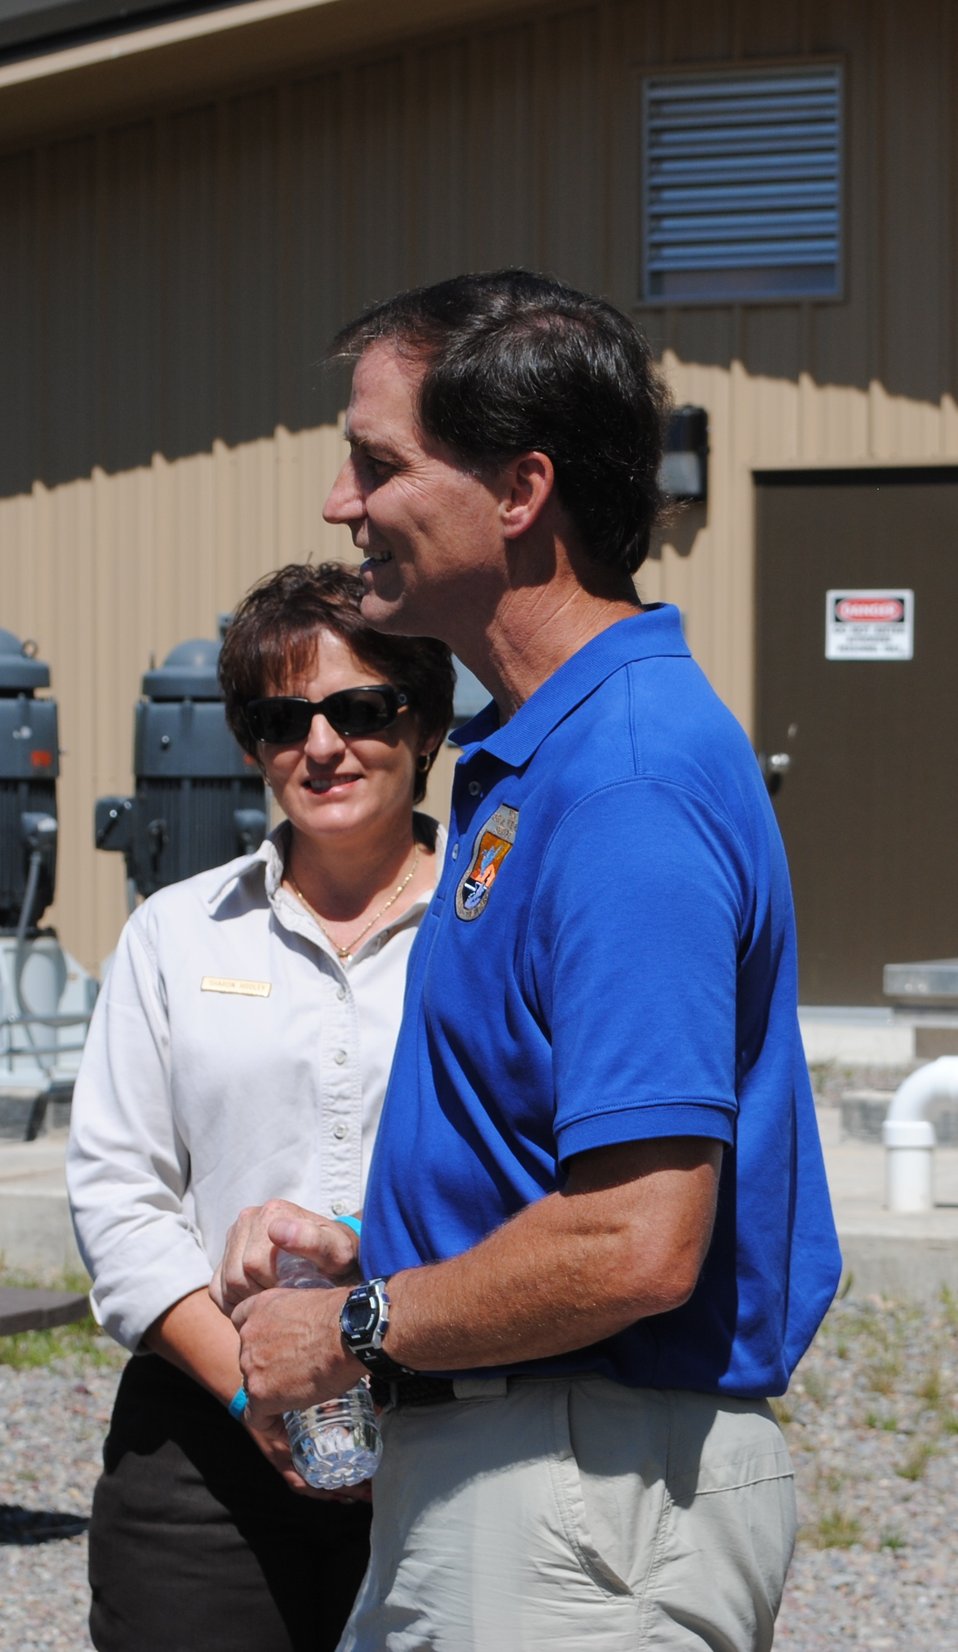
Director Ashe at Creston National Fish Hatchery

Administrative Officer Sharon Hooley of Creston NFH, stands near Director Dan Ashe on his visit to the hatchery.